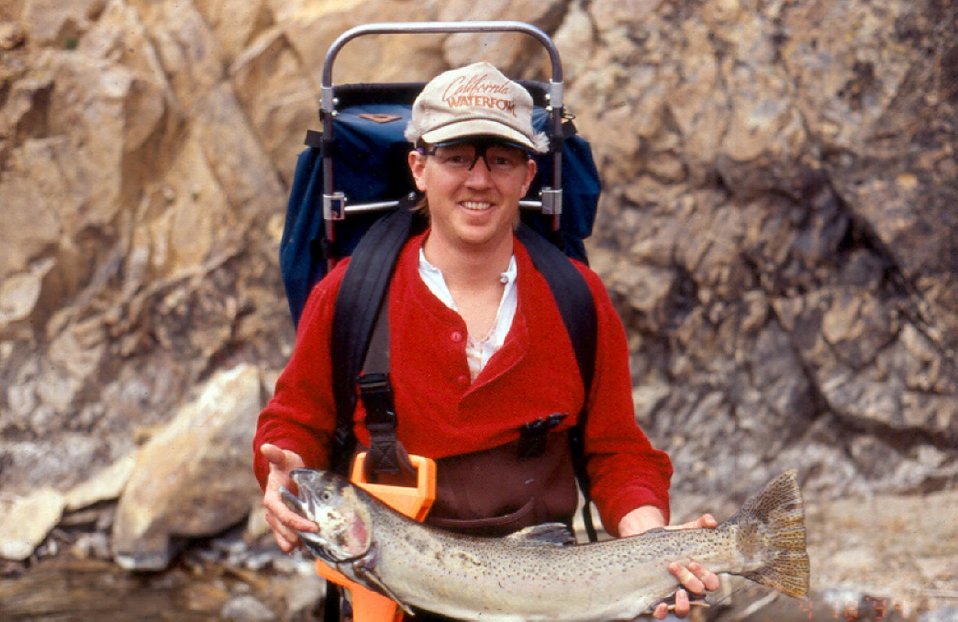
Steelhead Salmon Field Office UCSC Upper Columbia Salmon Clearwater District